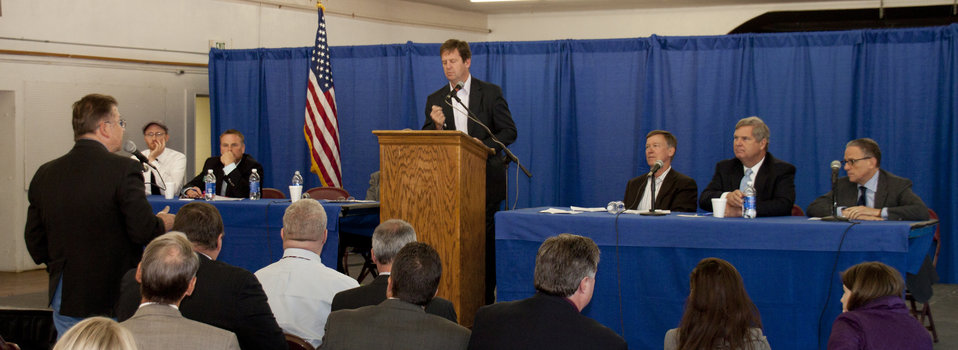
Left to right Michael Hartkop, Rusty Collins, Ken Lund, Governor’s Office of Economic Development and International Trade, Governor John Hickenlooper, Agriculture Secretary Vilsack and President and Chairman Hochberg listen to a question from the audience at the Forum and Panel Discussion “Trade and Exports: Bringing Rural and Urban Development Together” at the Colorado State Fairground, 4H Auditorium in Pueblo, CO., on Thursday, October 11, 2012.